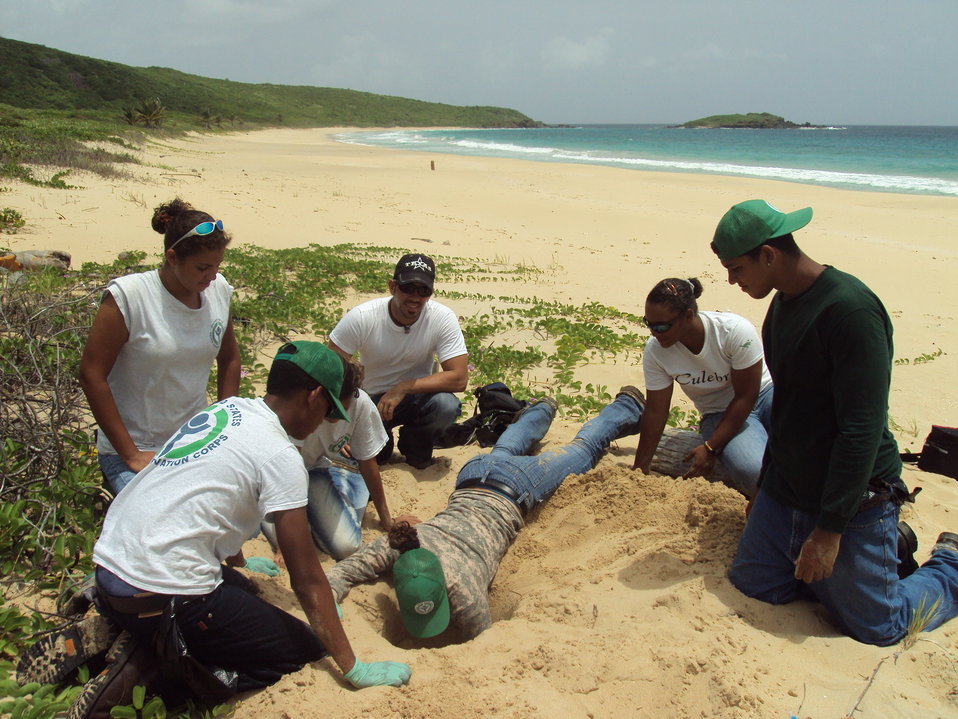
Culebra Natl Wildlife Refuge, Puerto Rico

Relocating nests, Credit USFWS